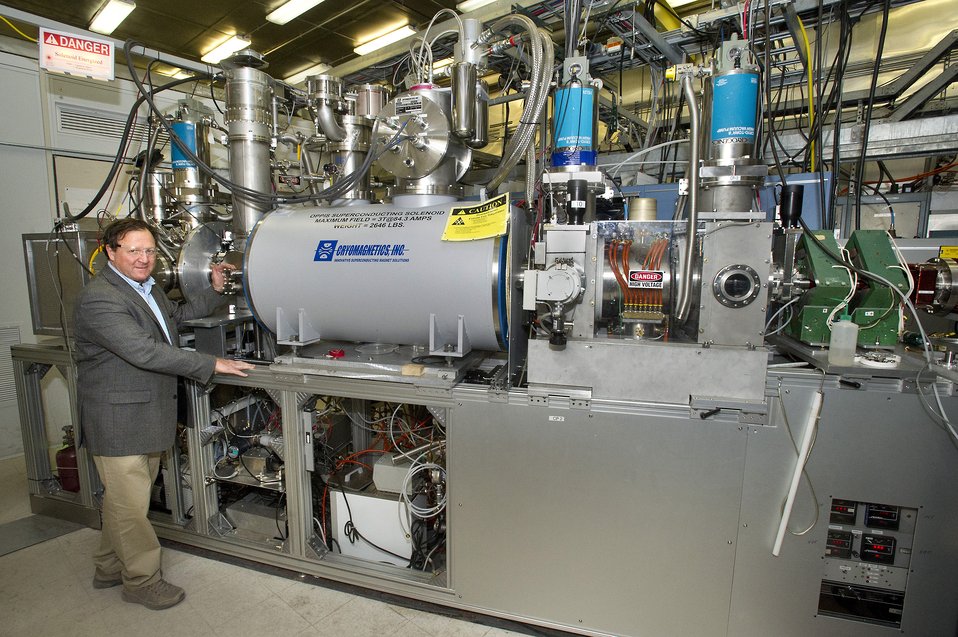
A new Optically Pumped Polarized Ion Source (OPPIS) will make its debut for the thirteenth run of Brookhaven's Relativistic Heavy Ion Collider (RHIC).

The OPPIS system uses a laser to polarize negatively charged electrons, which are then attached to protons to which their spin is transferred. The new OPPIS source will produce many more polarized protons than the old one.